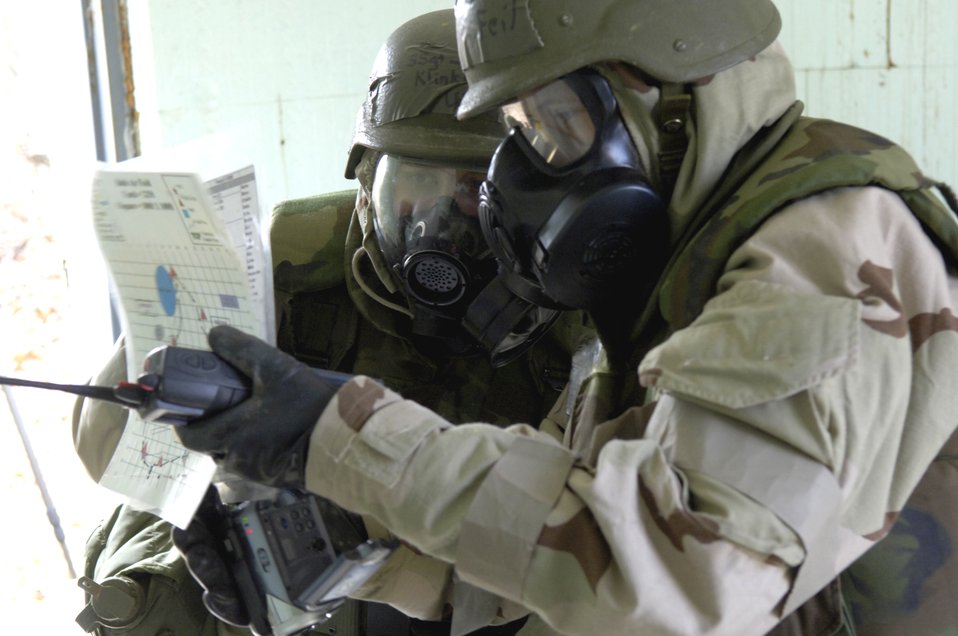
Readiness troops train for the future

Staff Sgts. Jenna Klinkenberg (left) and Jessica Feil look over their notes while performing a site survey of a potentially contaminated room Nov. 16. The survey was part of a readiness training exercise at Fort Leonard Wood, Mo. The exercise is designed to give readiness Airmen training scenarios developed from lessons learned during operations Iraqi Freedom and Enduring Freedom. The two-day exercise is the part of a two-week training class here. Sergeant Klinkenberg is with the 3rd Civil Engineer Squadron, Elmendorf Air Force Base, Alaska, and Sergeant Feil is with Detachment 1, 823rd Red Horse, Tyndall AFB, Fla.